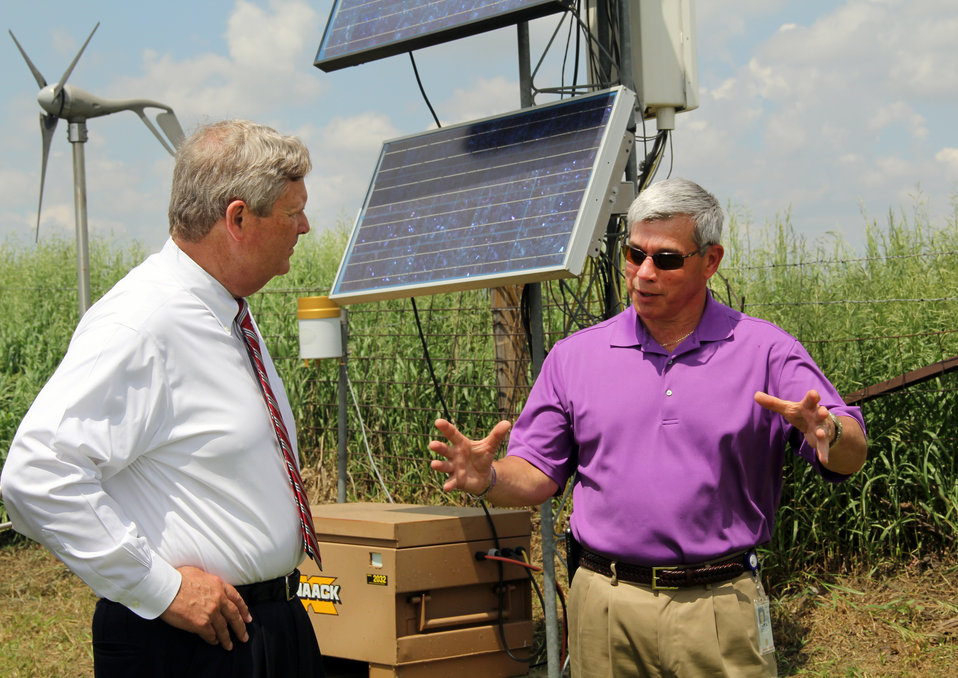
Agriculture Secretary Tom Vilsack to U.S. Department of Agriculture (USDA) Agricultural Research Service (ARS) supervisory plant physiologist Dr. Jerry Hatfield explain the equipment to gather information on climate changes and impacts on corn and soybean plants in Iowa on Jun. 6, 2014.
Eddy Covariance equipment which measures the turbulence in the air and the CO2 and H2O vapor concentrations in the atmosphere. To couple all of those signals to measure the exchange of CO2 and H2O vapor between the surface and the atmosphere. This allows researchers to track how the plants are responding to the atmospheric conditions and when they are under stress induced by dry soil conditions or excessive heat or cold. These are measured continually throughout the growing season to determine how effective the plant is at capturing CO2 and making a grain yield and how much water the plant uses during the growing season. We have a observation of these data for the past 15 years so that we can begin to see how different weather conditions affect the CO2 uptake and water release by the crop and how we can begin to develop management practices which would increase climatic resilience.